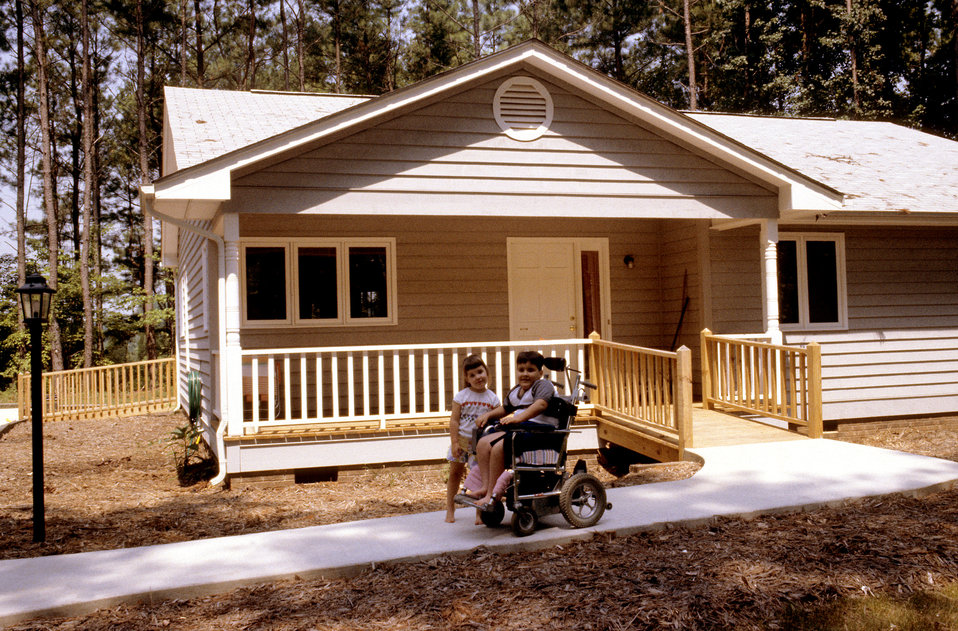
This is one of six images, (PHIL# 9155 - 9160), depicting the exterior of a small, wood frame, clapboard, single story house with a smooth, concrete pathway to the front porch. The porch was roofed, and was level with the first floor of the house. The pathway to the front door crossed a small, railed bridge in order to establish and maintain the proper drainage swale along the front of the house. In this image, a young wheelchair-seated boy and his sister were posed on this path. A retaining wall supported the earth berm upon which the pathway sat. The projection of a small ramp could be seen, on the left, at the rear of the house. The front door has a full-height sidelight window. This type of stepless, universal entrance avoided the construction, slopes, and maintenance issues of ramped entrances, thereby, avoiding the unattractive and stigmatizing appearance of most ramps.